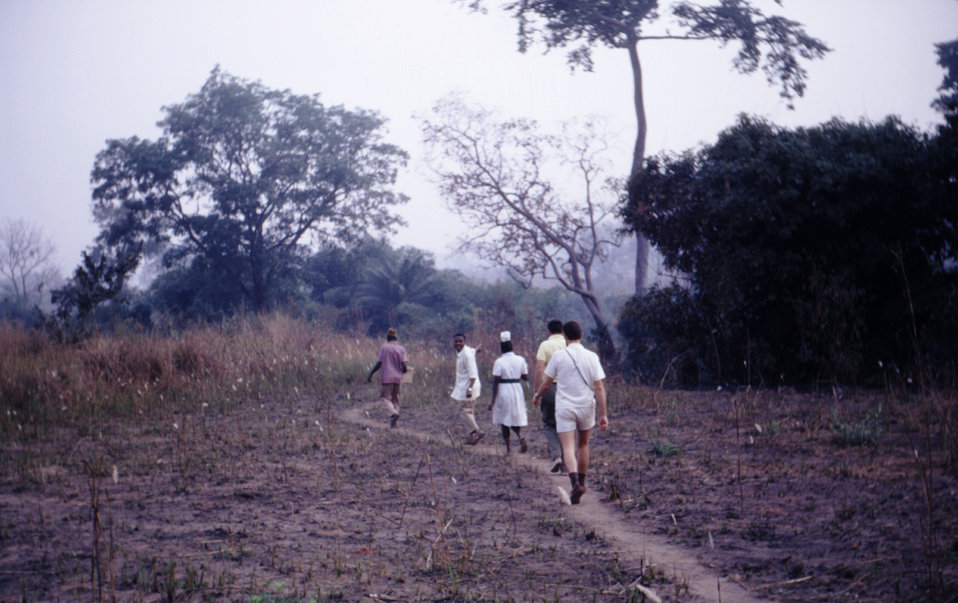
This 1969 photograph showed CDC EIS officers walking with Dekina, Nigeria hospital staff members during a local smallpox outbreak.